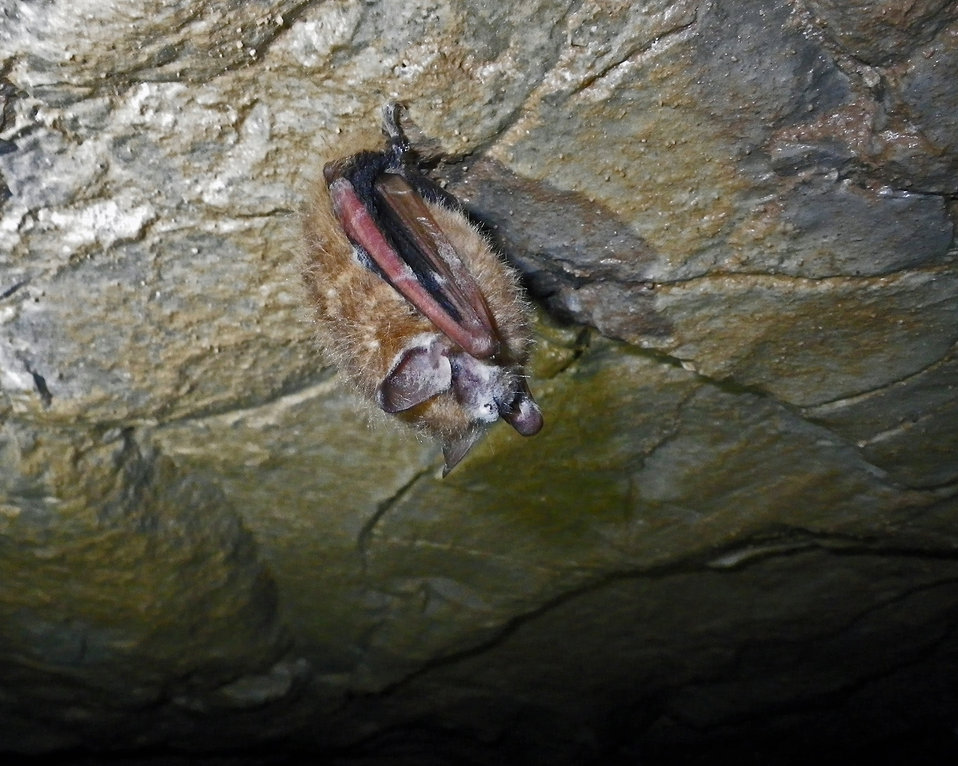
The first cases of White-nose Syndrome in Alabama Found in Jackson County.

Infected tri-colored bat (Perimyotis subflavus) in Jackson County, Alabama cave